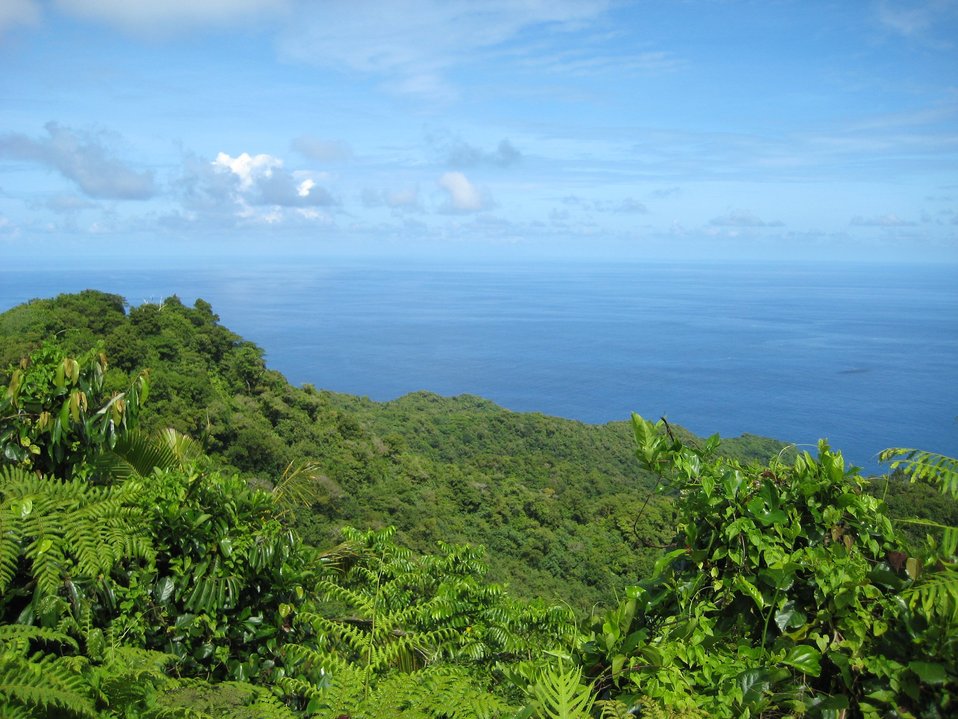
A view over the lush Samoan vegetation to the Pacific Ocean